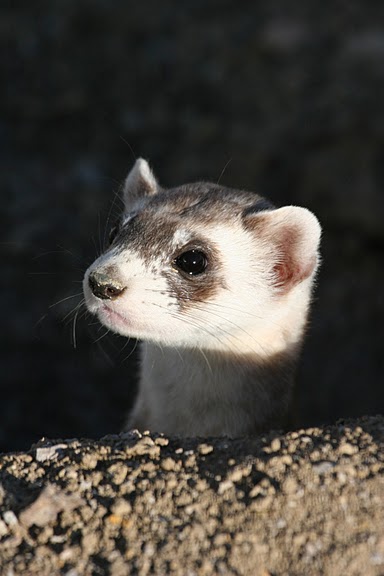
Black-footed Ferret